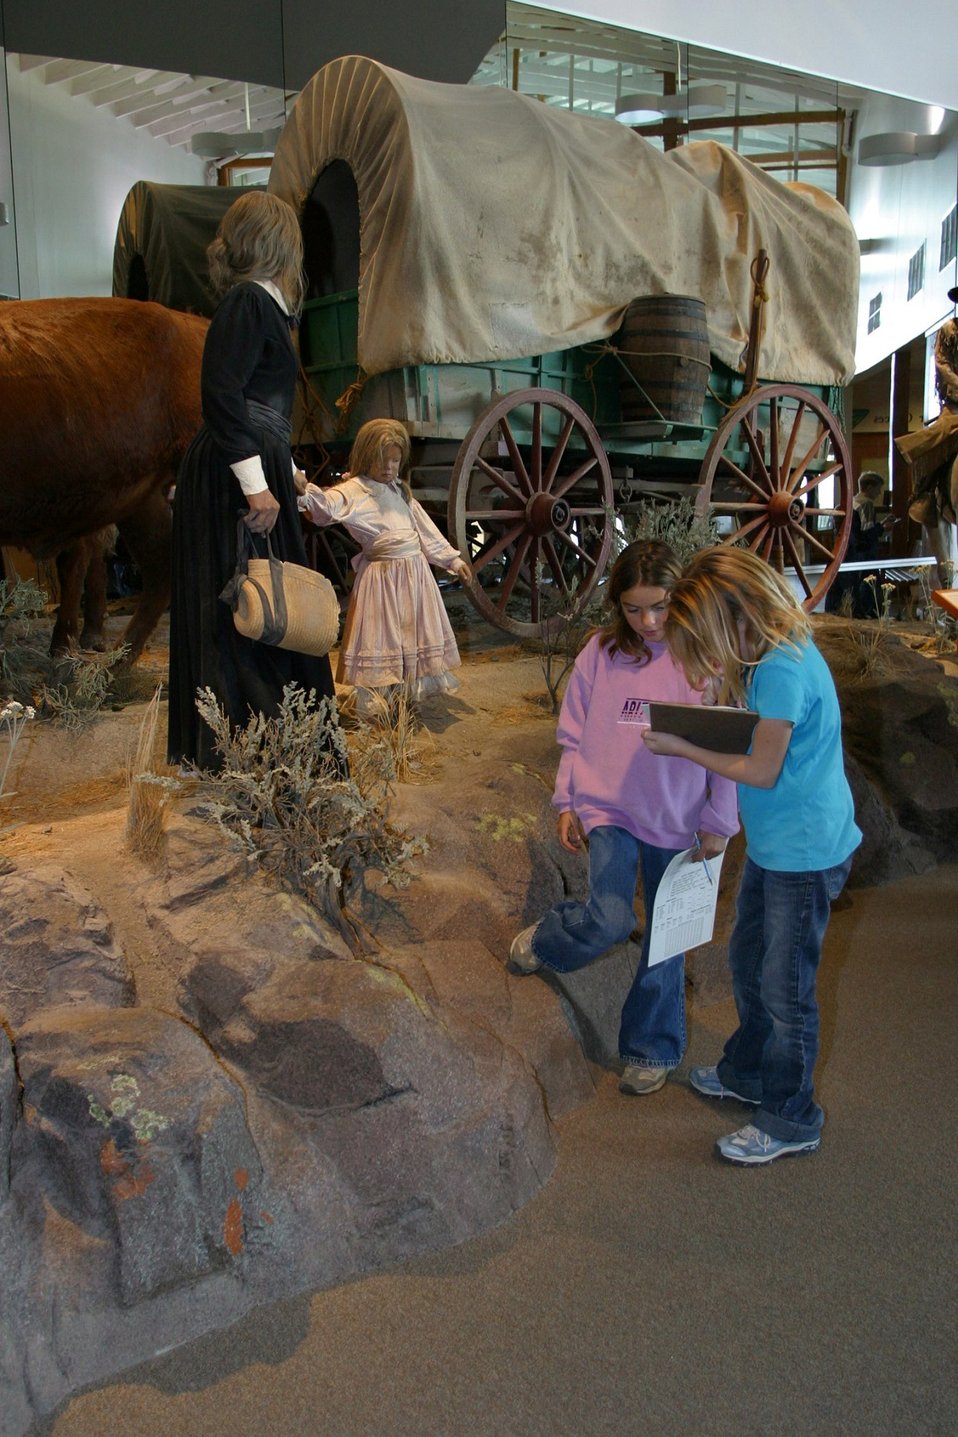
Hundreds of school children visit the National Historic Oregon Trail Interpretive Center every year.